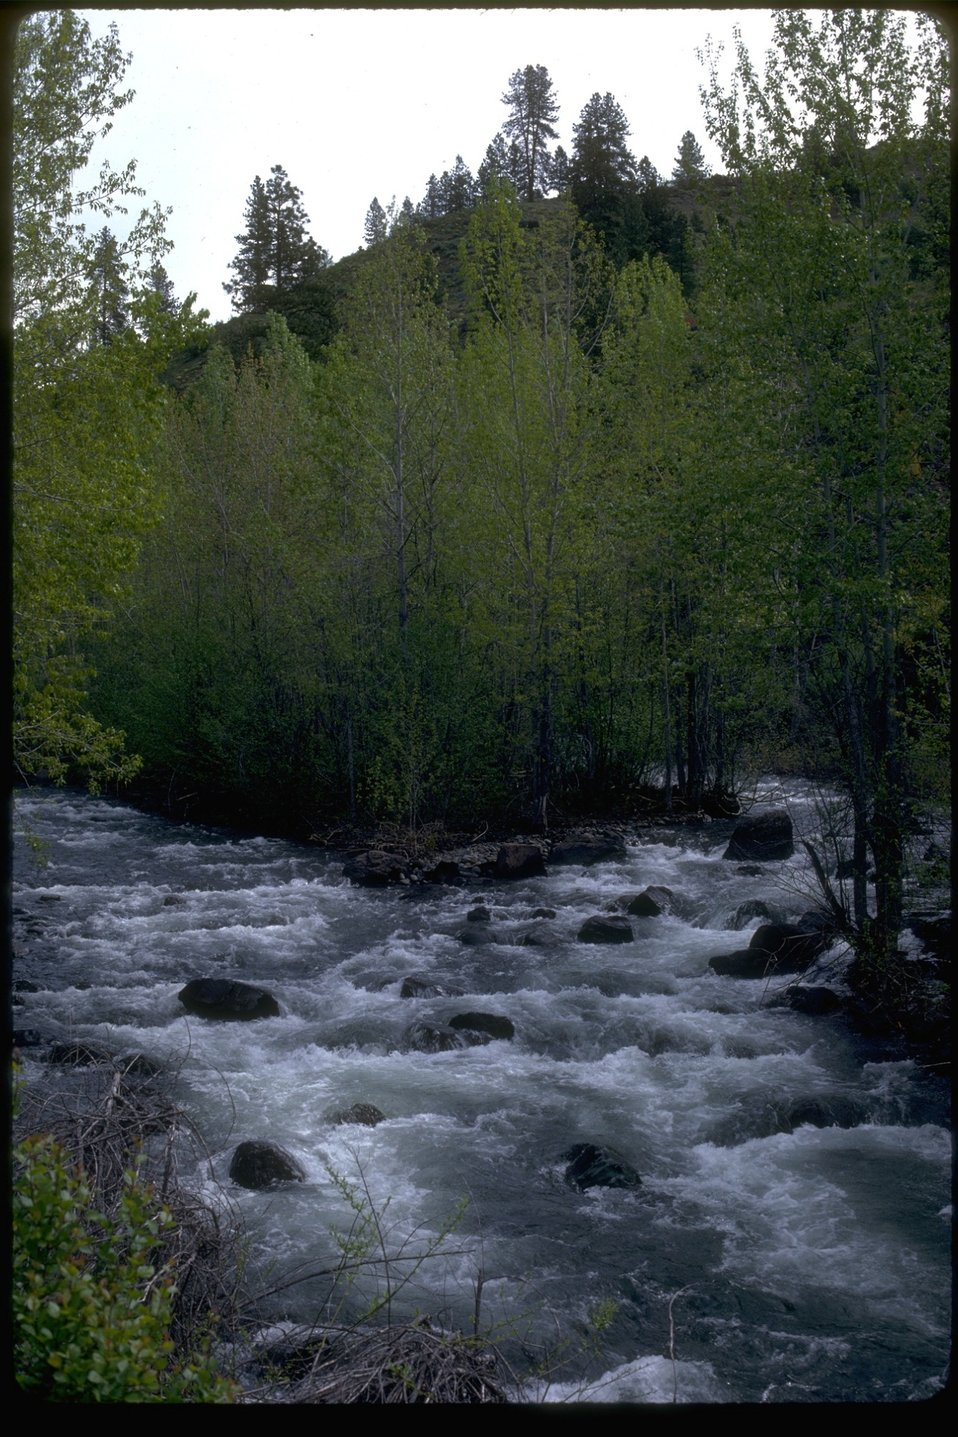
North Pine Creek found in the Homestead Wilderness Study Area. OR 6-2